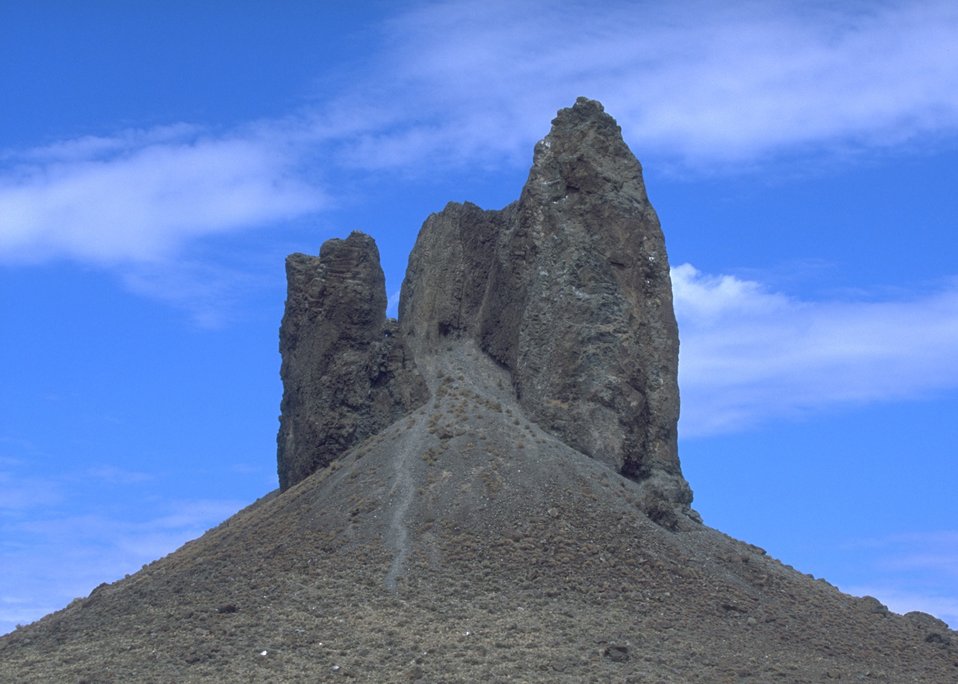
Boar's Tusk, Rock Springs Field Office.